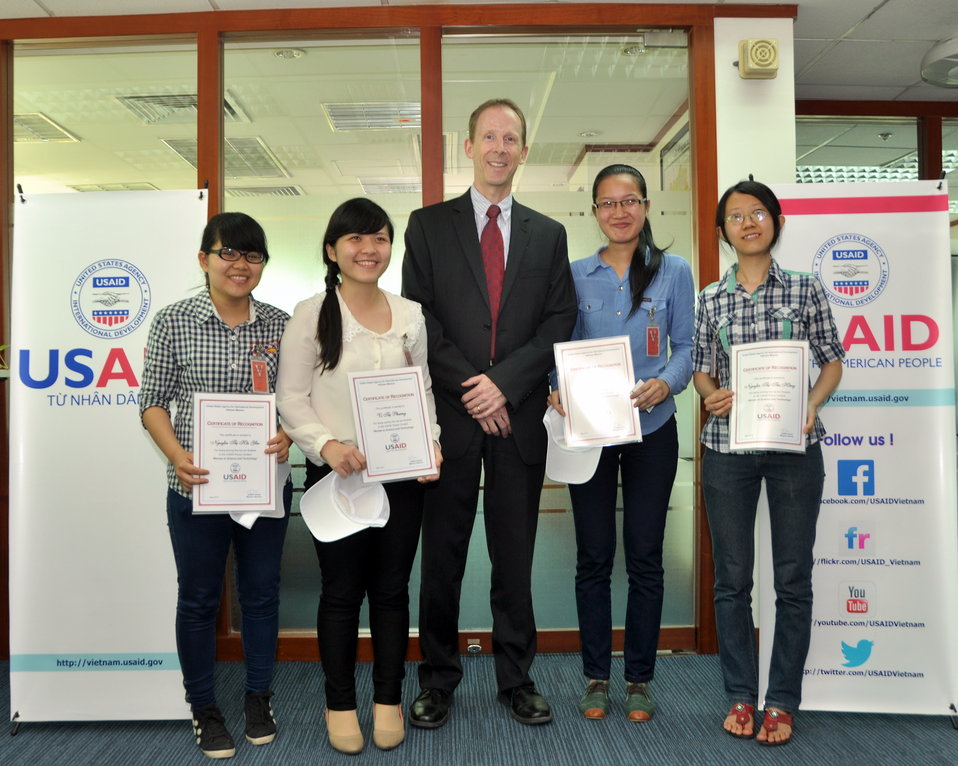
Women in Science and Technology Essay Contest Award Ceremony

USAID Mission Director Joakim Parker awards certificates to top ten finalists in Hanoi. May 16, 2013.